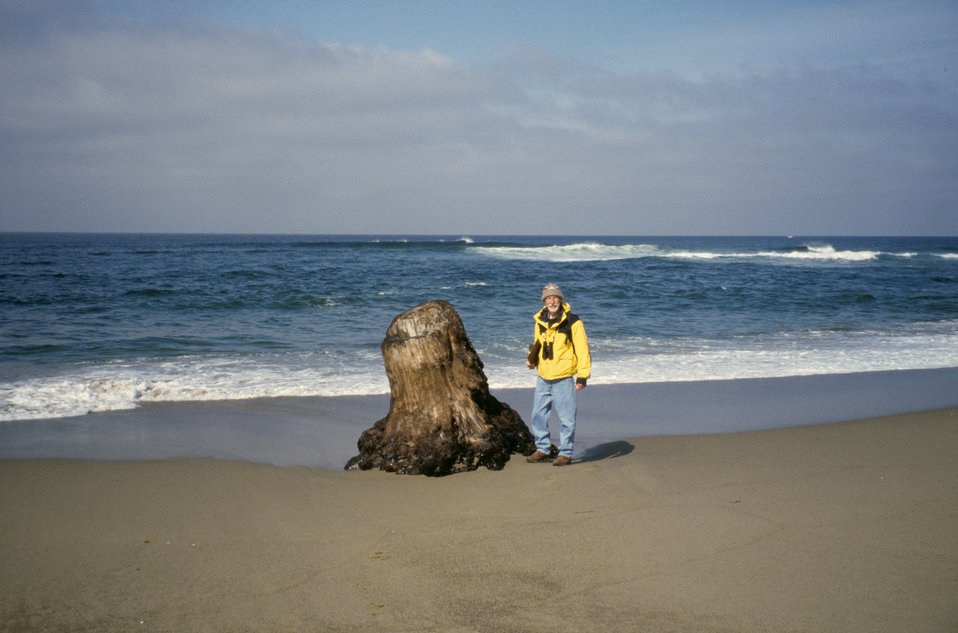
Point Reyes Great Beach. Beach Watch volunteer next to large tree stump.